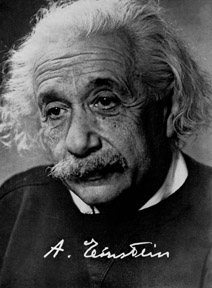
Albert Einstein.